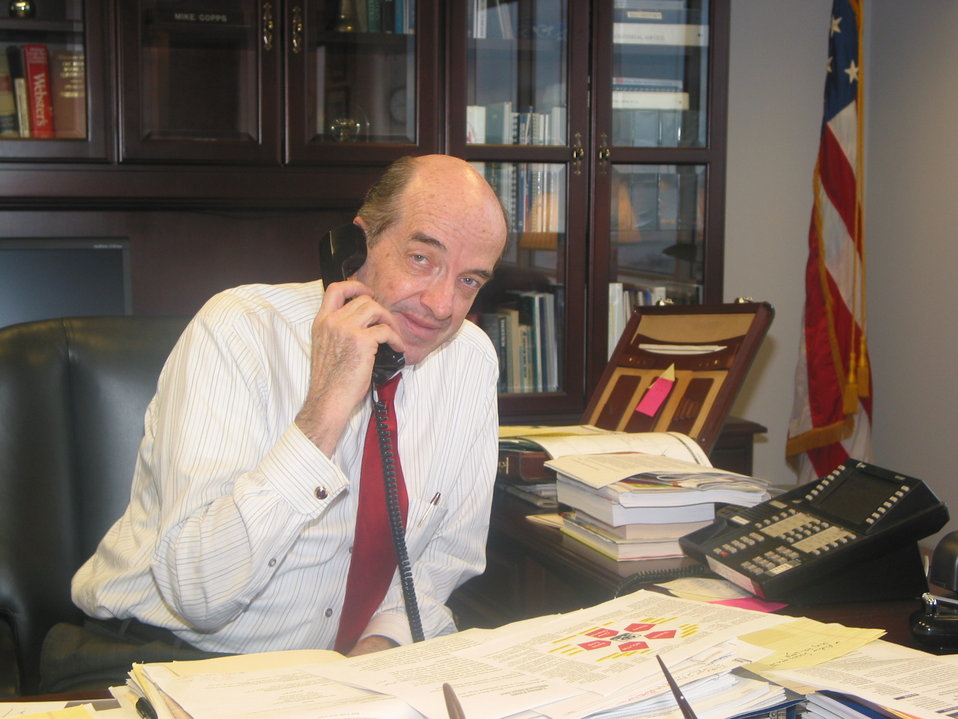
Michael Copps 3